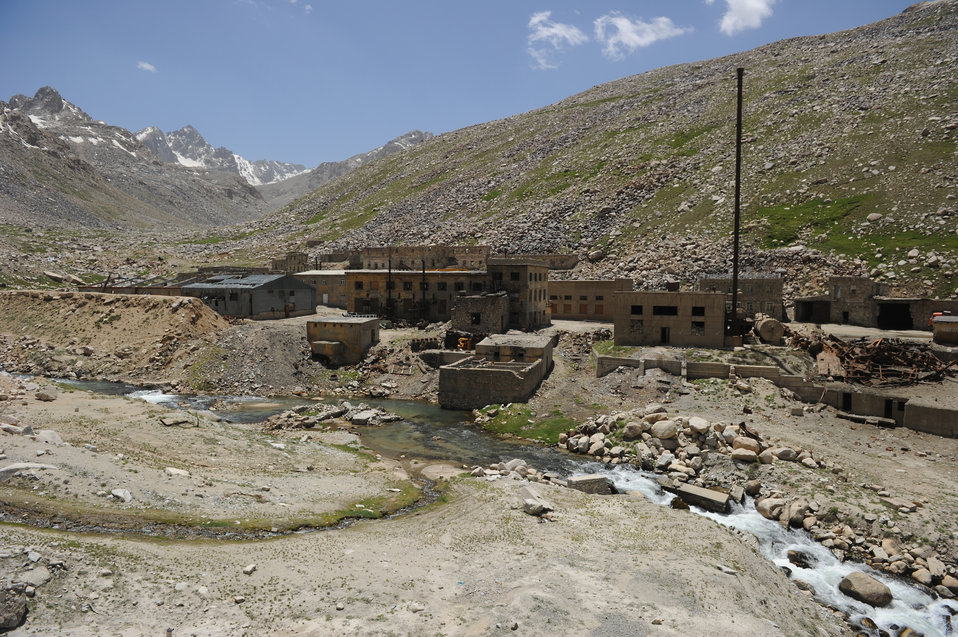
Across the river from the North entrance of the Salang Tunnel on the border of Parwan and Baghlan Provinces, Afghanistan, on Wednesday, June 15, 2011. (S.K.Vemmer/Department of State)